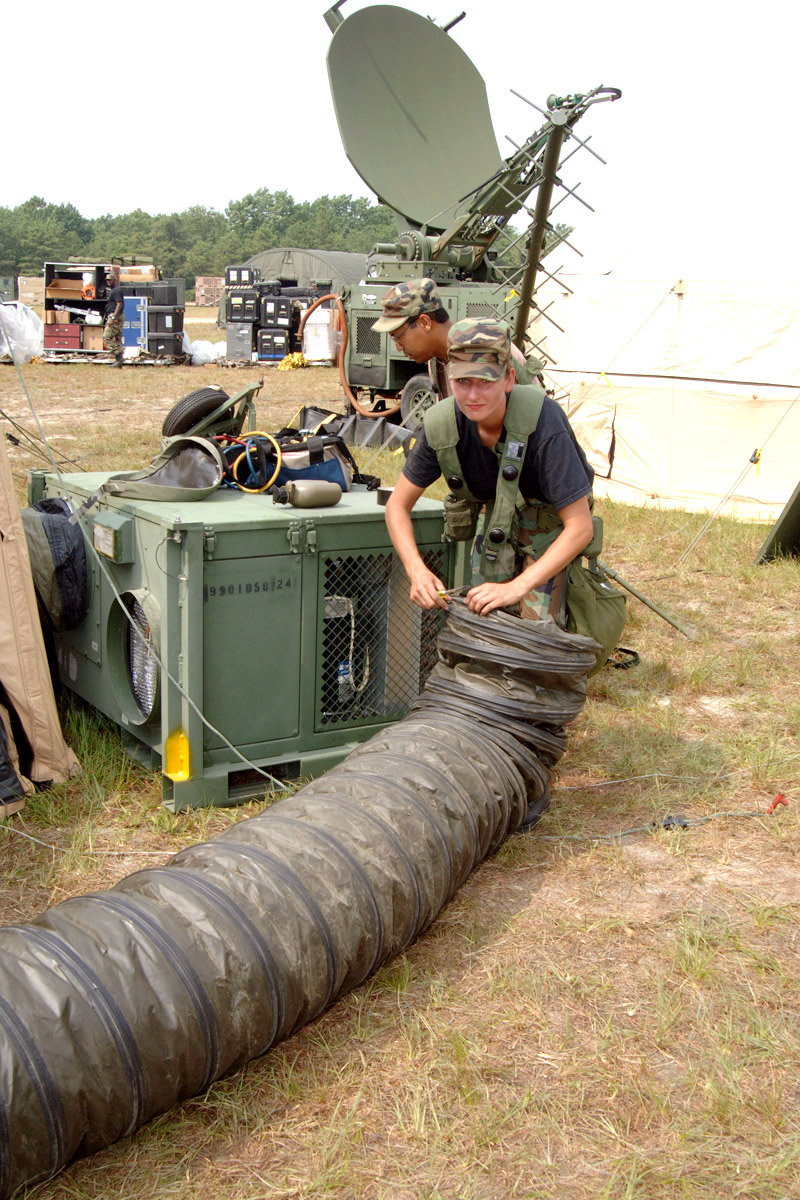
Settin' up

LAKEHURST, N.J. -- Senior Airman Lisa Tkaczyck installs a tent air conditioner while deployed to Eagle Flag, an air and space expeditionary force support exercise. The goal of the exercise is to open and establish an air base at a forward-deployed location. Airman Tkaczyck is assigned to the 612th Air Communications Squadron at Davis-Monthan Air Force Base, Ariz.